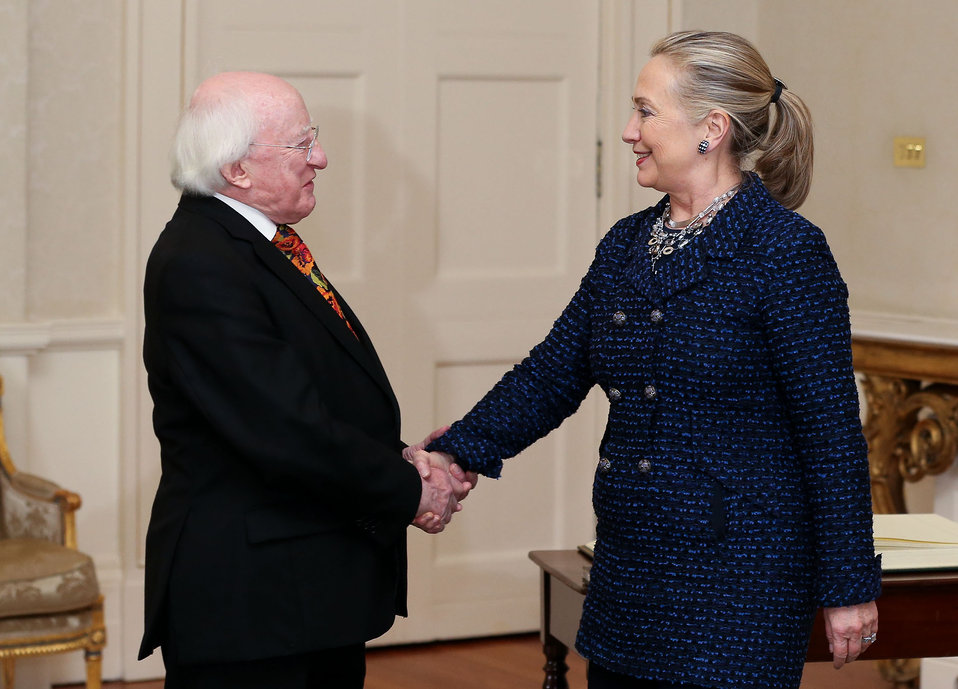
Secretary Clinton Meets With Irish President Higgins

U.S. Secretary of State Hillary Rodham Clinton meets with Irish President Michael D. Higgins at Aras An Uachtarain in Dublin, Ireland, December 6, 2012.